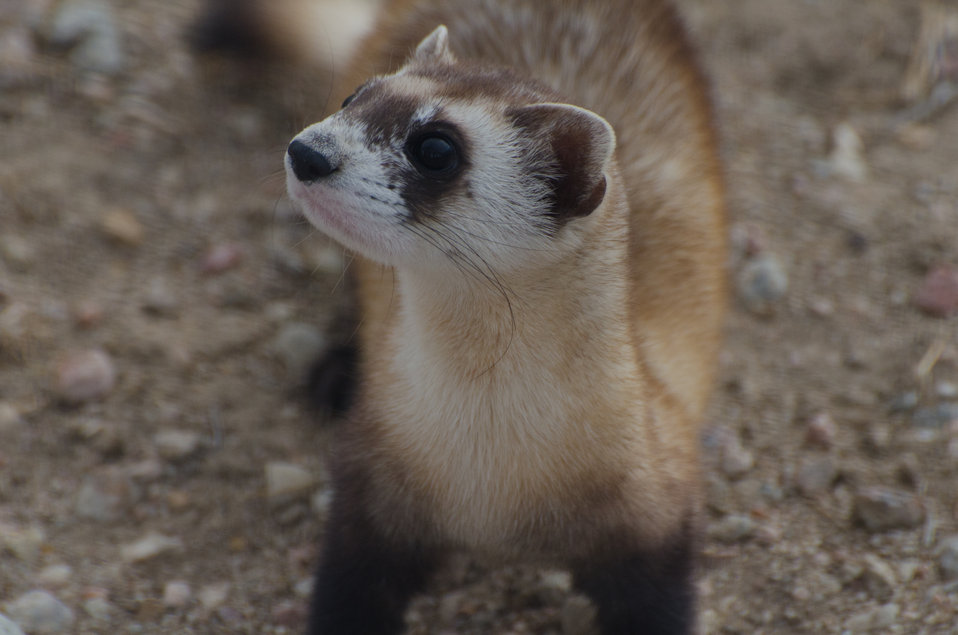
FERRET IN OUTSIDE PENS

A Black-footed Ferret waits for the daily feeding in the outside pens at the National Black-footed Ferret Conservation Center in Colorado.